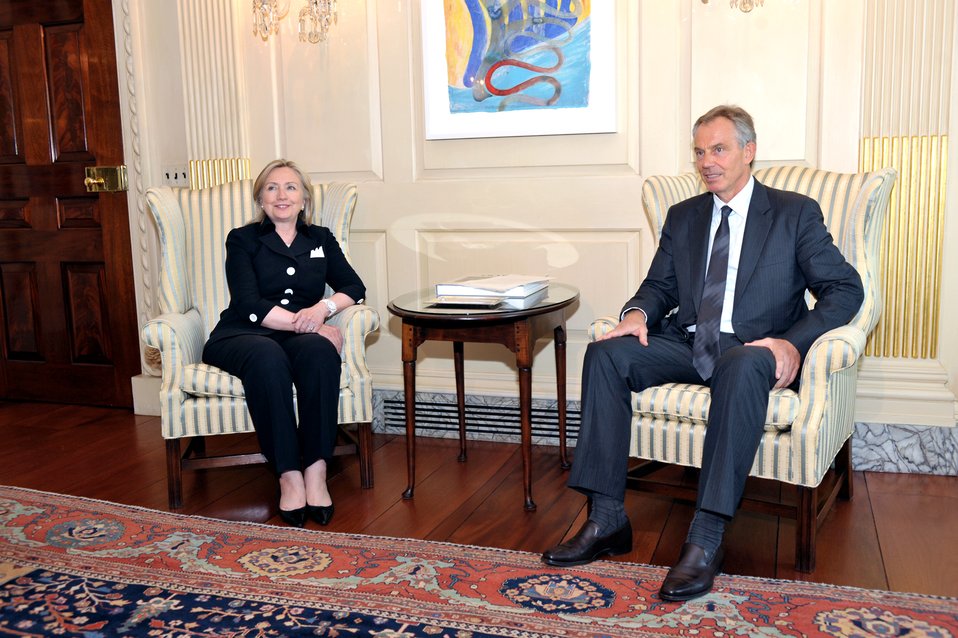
Secretary Clinton Meets With Quartet Representative Blair

U.S. Secretary of State Hillary Rodham Clinton meets with Quartet Representative Tony Blair at the U.S. Department of State in Washington, D.C., on August 31, 2010.